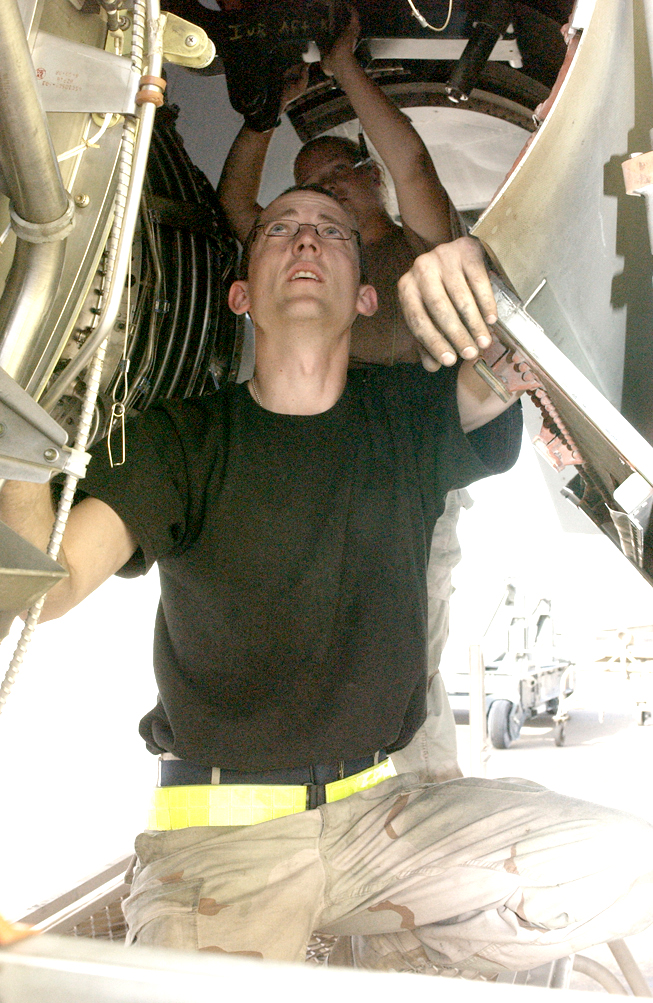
Two deployed KC-135s get rare engine swaps

SOUTHWEST ASIA -- Staff Sgt. JC Chandler inspects a newly installed engine on a KC-135 Stratotanker at a forward-deployed location. He is deployed with the 380th Expeditionary Aircraft Maintenance Squadron.